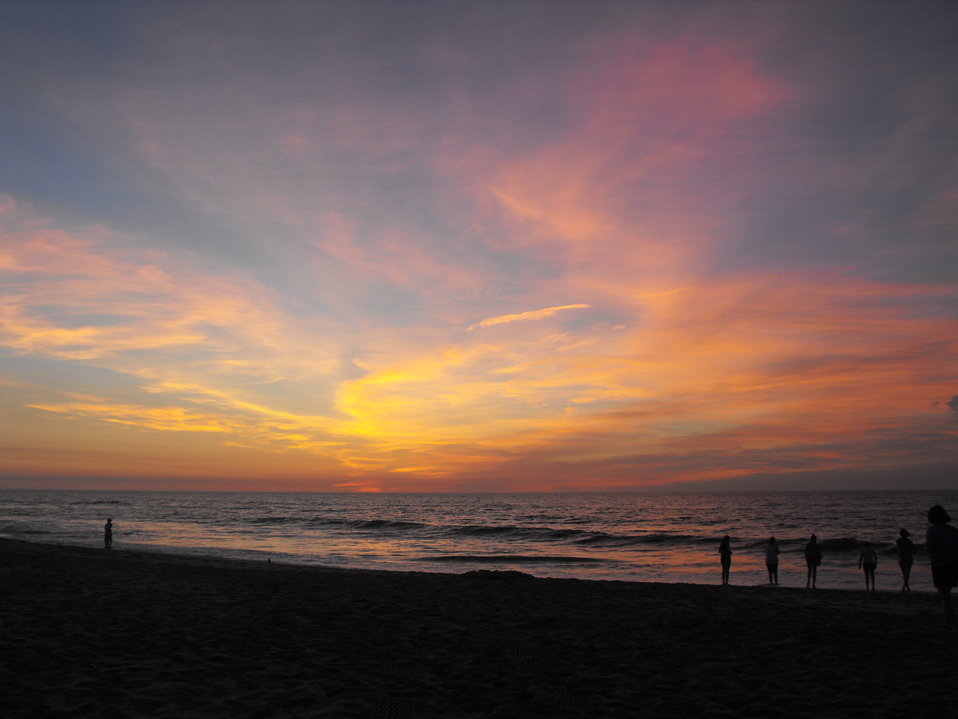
Sunrise over the beach at Chincoteague National Wildlife Refuge / Assateague Island National Seashore on the morning of the Sunrise Pony Walk down the beach. This walk is part of Pony Penning Week.